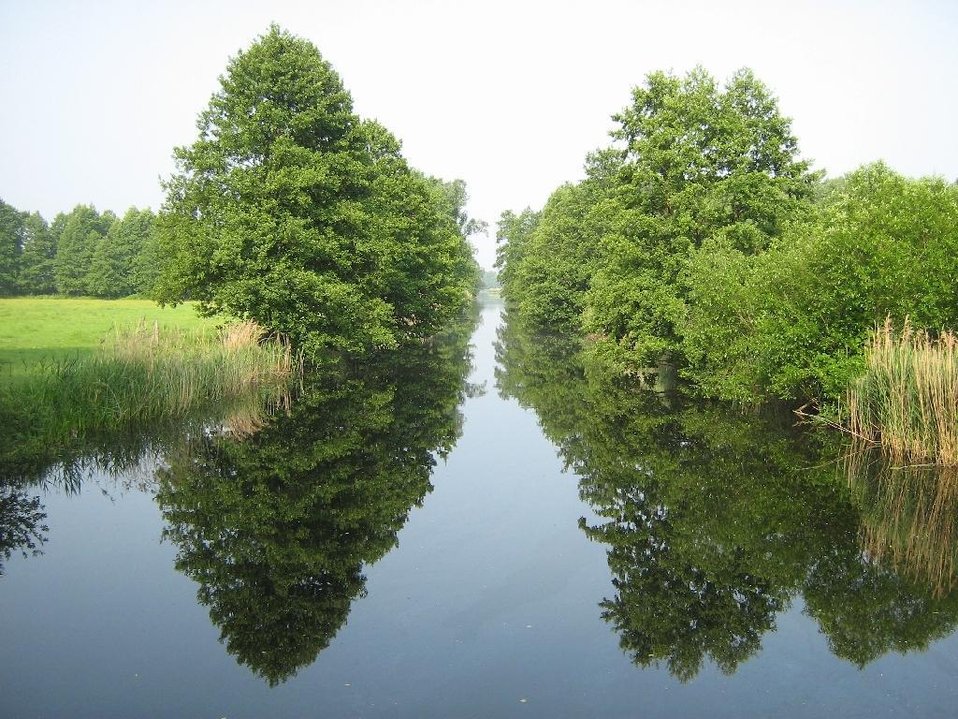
Deutsch: Der Dahme-Umflutkanal kurz vor seiner Einmündung in den Köthener See (Landkreis Dahme-Spreewald, Brandenburg).